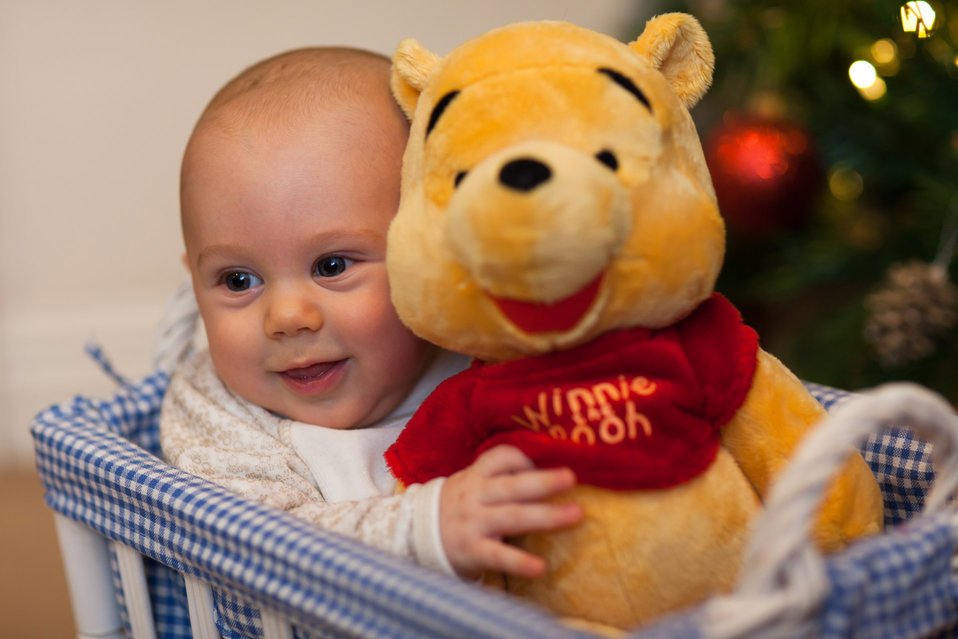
First christmas

Happy baby is enjoying his first christmas.